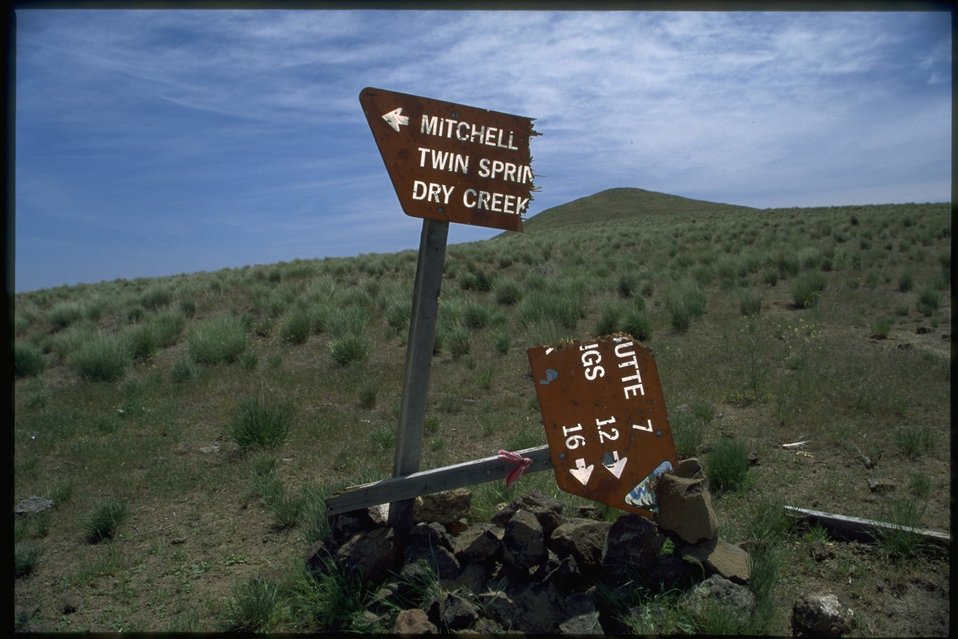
Broken sign.